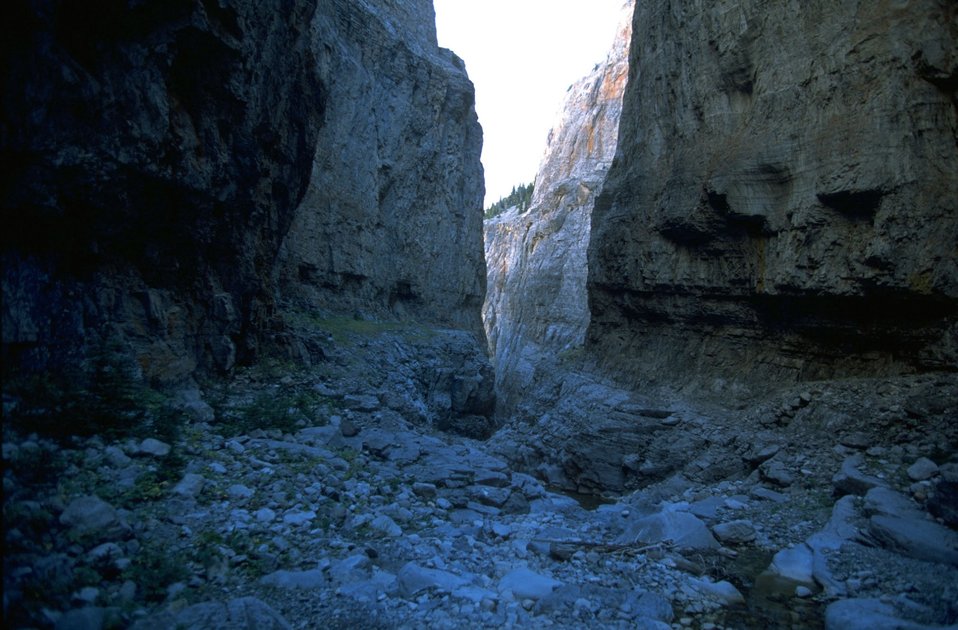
Looking east at Muddy Creek in the Rocky Mountain Front